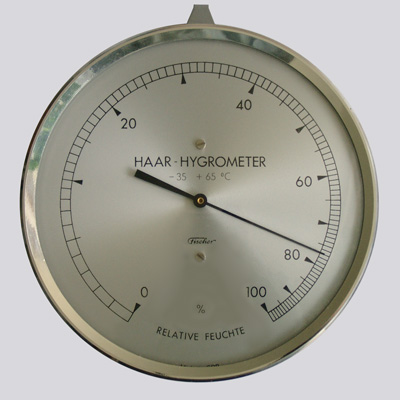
Haar-Hygrometer